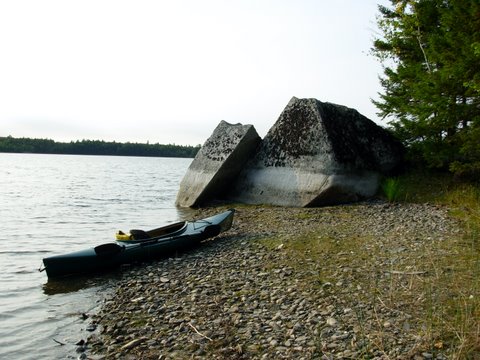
Uploaded by request of Kandis Davis

Taken at Silver-Pug Lake, Maine

A day kayking, resting and having a shore lunch